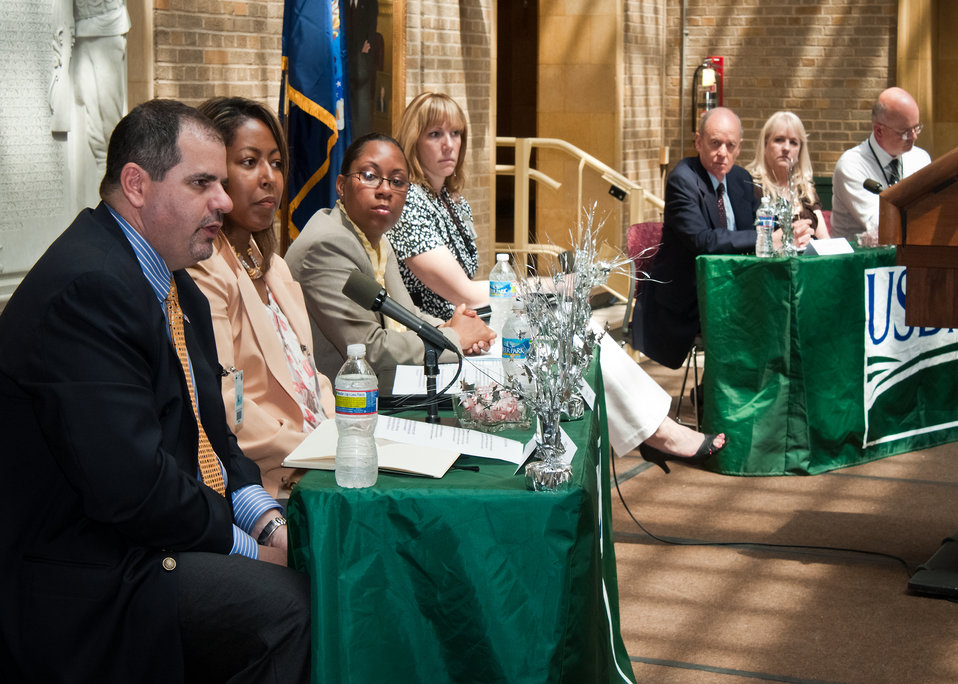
From left: Josh Sawislak, Senior Fellow Telework Exchange, Connie Doyle, Senior Consultant, Trainer and Executive Coach with CI International, Robyn Poole, WorkLife Program Lead Specialist, Federal Deposit Insurance Corporation, Mika Cross, Office of Human Resources Management, Departmental Management, Morris Tate, Director for Business Services, Office of Operations, Debra Arnold, Rural Development and President, AFSCME Union Local 3870 (USDA) and Owen Unangst, Director, Innovations and Emerging Technologies, Office of the Chief Information Officer discussed the advantages and cost benefits to employees and the Department of Agriculture during a “Telework Program Party/Brown Bag” event on the patio of the Jamie Whitten Building of United States Department of Agriculture, in Washington, DC, on Tuesday, June 7, 2011. The event included an interactive telework panel and exhibits from the field of telework, telecommuting and mobile work environments. The event was open to all USDA employees, supervisors, managers, human resources staff and USDA telework program coordinators.